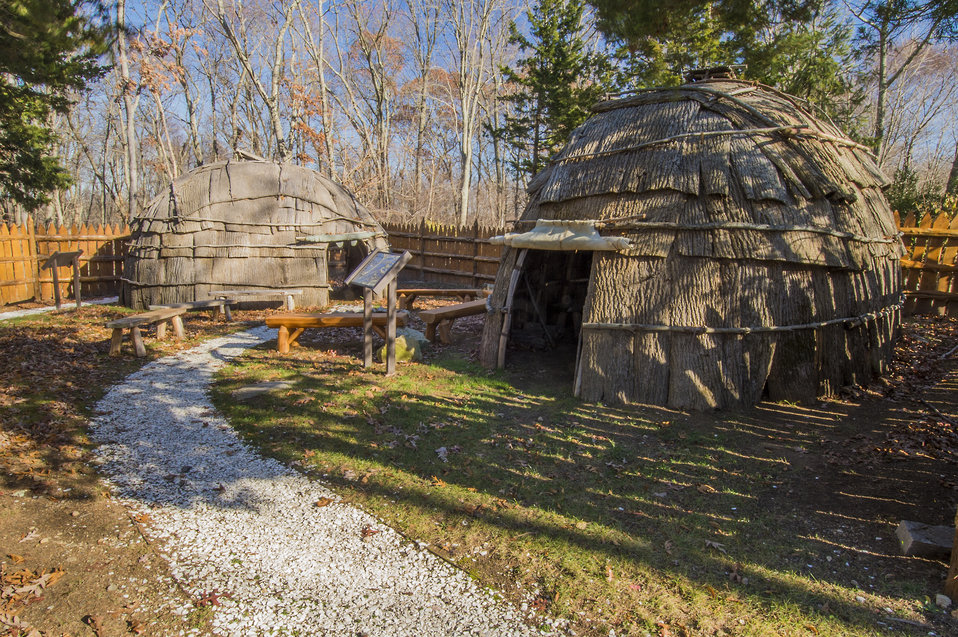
The Mohegan Tribe’s museum is the oldest Indian owned and operated museum in America. Gladys Tantaquidgeon along with her brother, Harold and father John, built the museum in 1931 in Uncasville, CT as a place to keep Mohegan treasures.